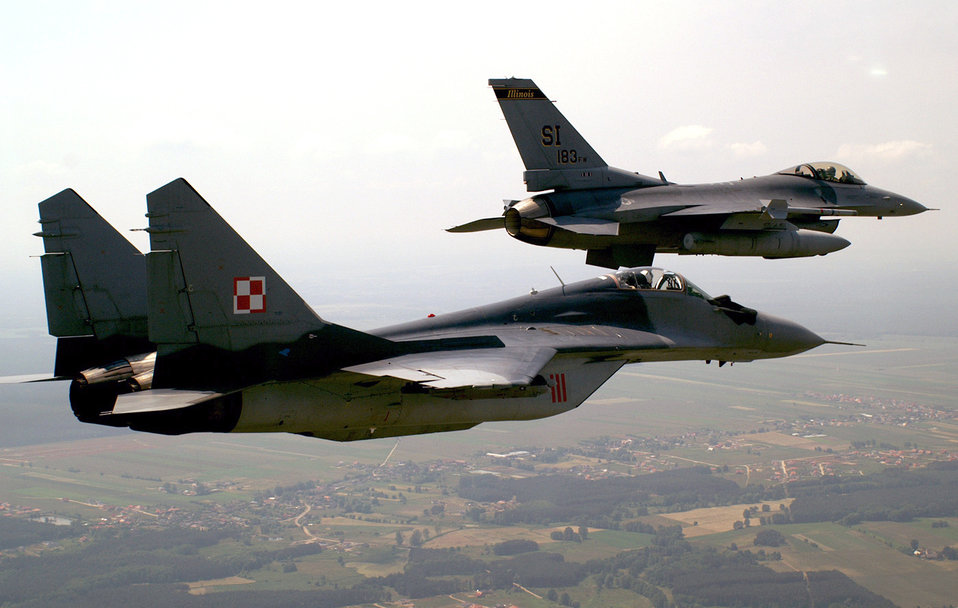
Birds of a feather

OVER KRZESINY AIR BASE, Poland -- An F-16 Fighting Falcon flies in formation with a MiG-29 here during exercise Sentry White Falcon 2005. The F-16 is assigned to the Illinois Air National Guard's 183d Fighter Wing in Springfield.